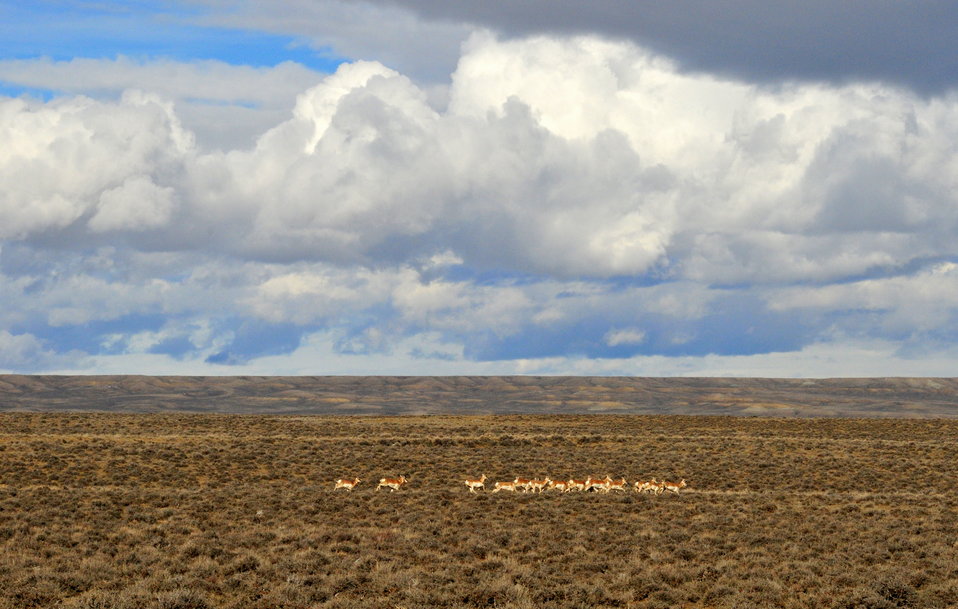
Pronghorns near Seedskadee NWR 01

A group of pronghorns in sage-steppe of southwest Wyoming near Seedskadee NWR